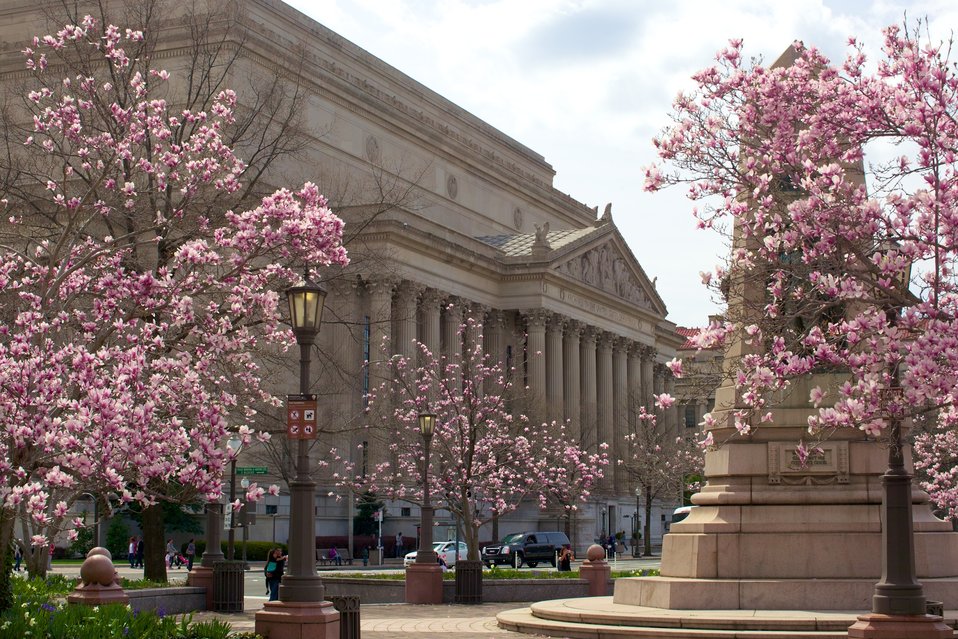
Blooming Magnolias in Indiana Plaza, catty-corner from the National Archives in Washington, DC